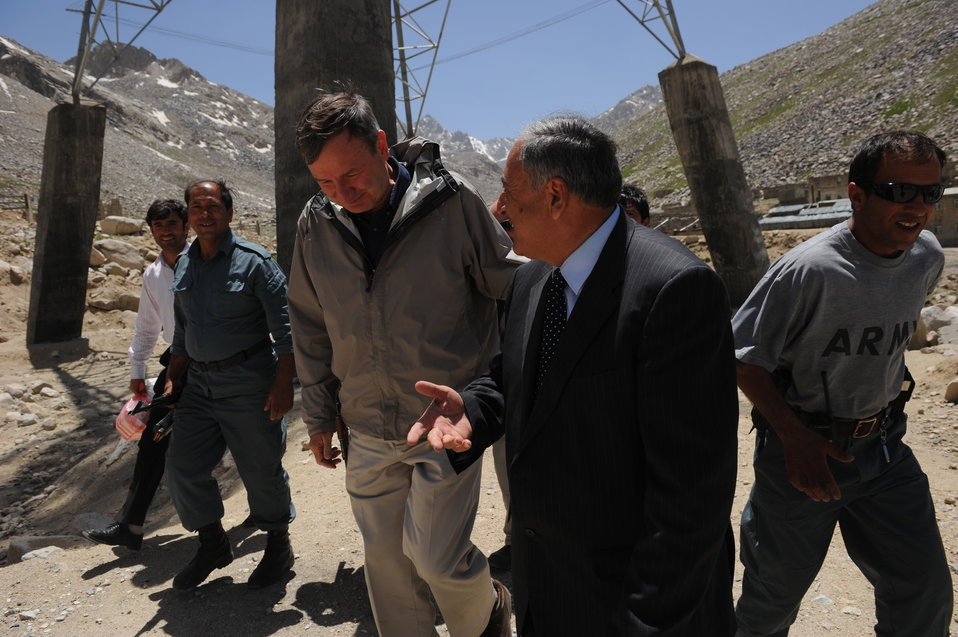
U.S. Ambassador Karl W. Eikenberry attends a ceremony to mark the beginning of renovations at the Salang Tunnel on the border of Parwan and Baghlan Provinces, Afghanistan, on Wednesday, June 15, 2011. (S.K.Vemmer/Department of State)